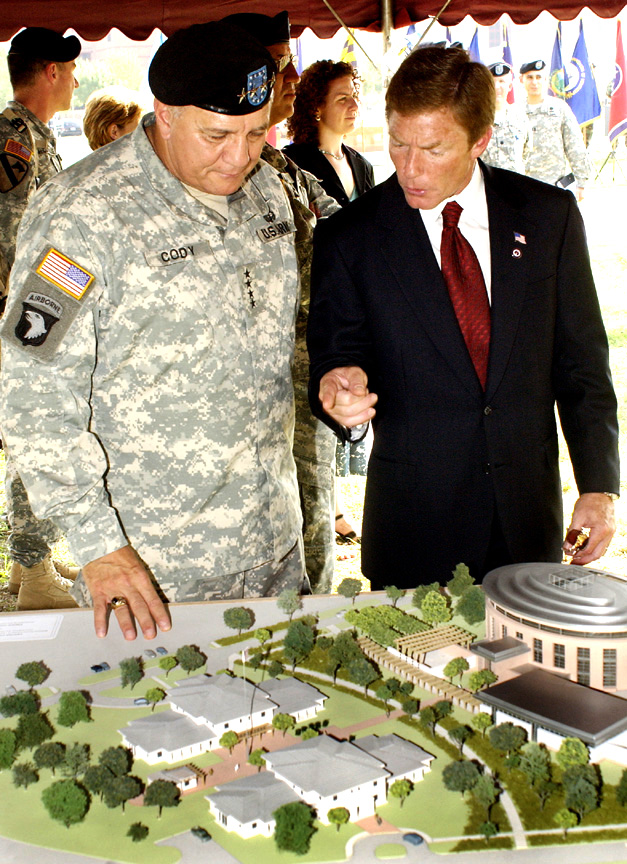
New rehabilitation center

FORT SAM HOUSTON, Texas -- Ken Fisher, chairman of the Fisher House Foundation, shows a model of the National Armed Forces Physical and Rehabilitation Center to Gen. Richard Cody, Army vice chief of staff, at the Sept. 22 groundbreaking for the facility that will be built near Brooke Army Medical Center here.